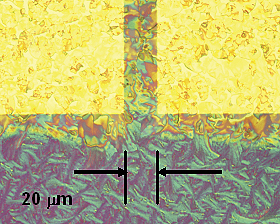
FET structures; optical micrographs

Optical micrographs of typical FET structures in the NIST/Penn State/UK experiments show the effect of pretreating contacts to promote organic crystal formation. Treated structure shows crystal structure extending from the rectangular contacts and merging in the channel.